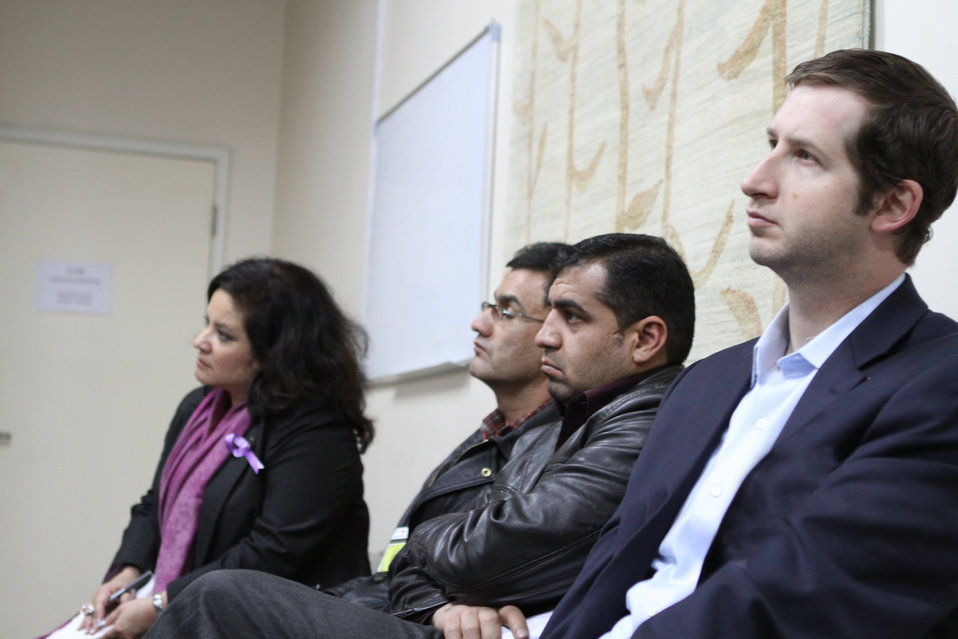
Presentation of the ACTA Civil Society analysis of the FY 1392 Afghan national budget